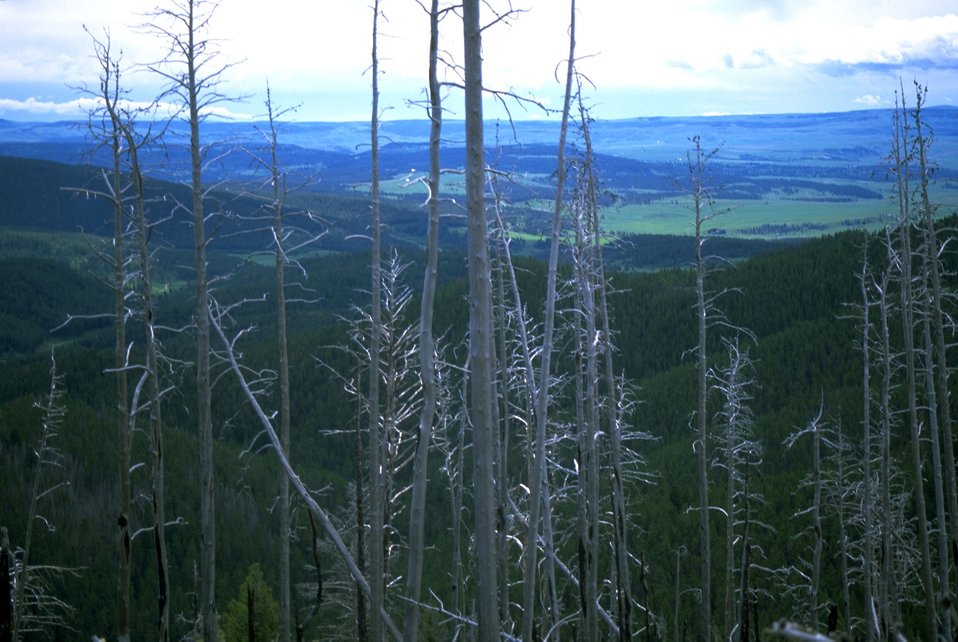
Dead trees in the Judith Mountains